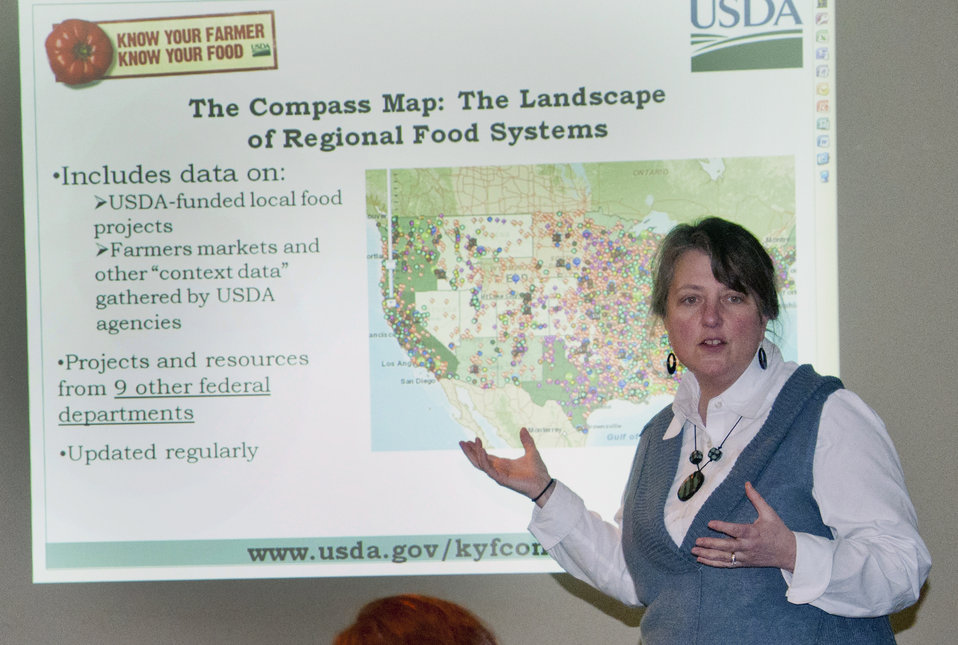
Agriculture Deputy Secretary Kathleen Merrigan provides training to U.S. Department of Agriculture (USDA) Natural Resources Conservation Service (NRCS), Farm Service Agency (FSA), and Rural Development (RD) staff at the Amite Service Center in Amite, LA on Know Your Farmer, Know Your Food (KYF) Food Compass on Feb. 26, 2013.